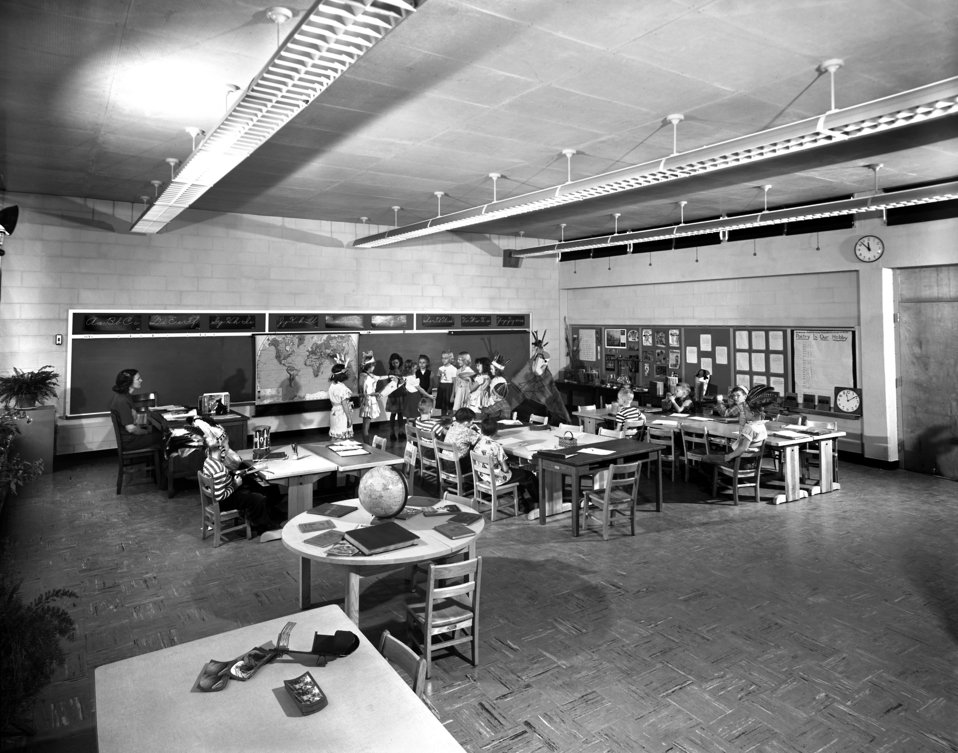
Willow Brook School Class Room 1949 Oak Ridge

5763-6b DOE photo Ed Westcott 11-29-1949 Oak Ridge Tennessee